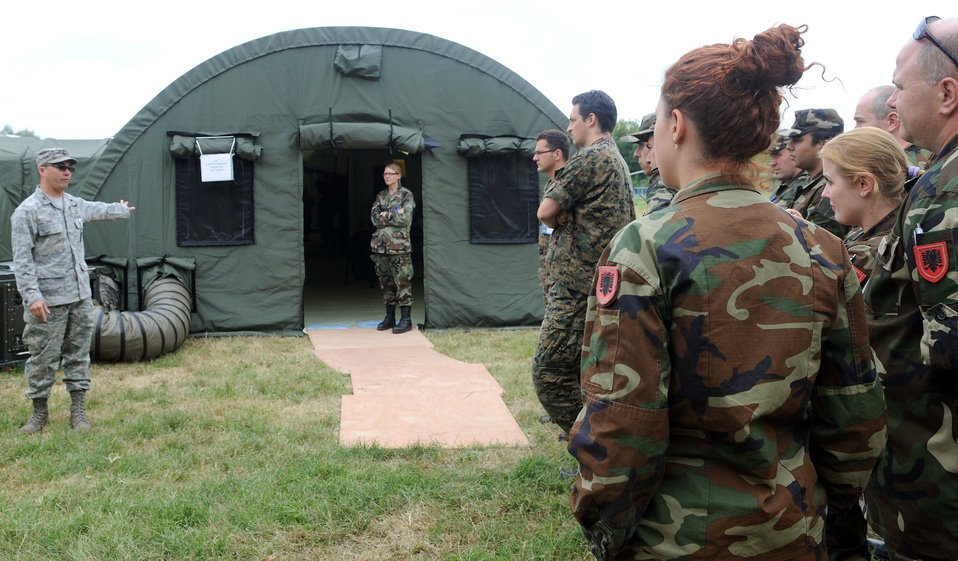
Airmen stand up medical squadron to support training exercise

Col. John Chu welcomes multinational soldiers to the mobile hospital facility during an exercise orientation Sept. 8, 2009, in Nis, Serbia. The exercise, hosted by Serbia, provides a joint medical learning environment and assists host nation civilian and military services; international, private and volunteer organizations; and other participating nations in enhancing disaster response actions. Colonel Chu is the 458th Expeditionary Medical Squadron commander.